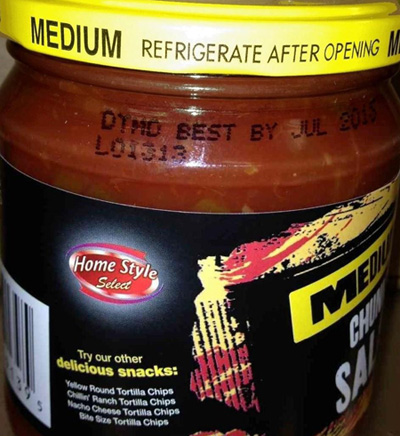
RECALLED – Salsa

July 22, 2013 – Product Recall – Olam Tomato Processors, Inc. Announces Voluntary Recall of Mild and Medium Chunky Salsa Because It May Contain Large Glass Pieces.